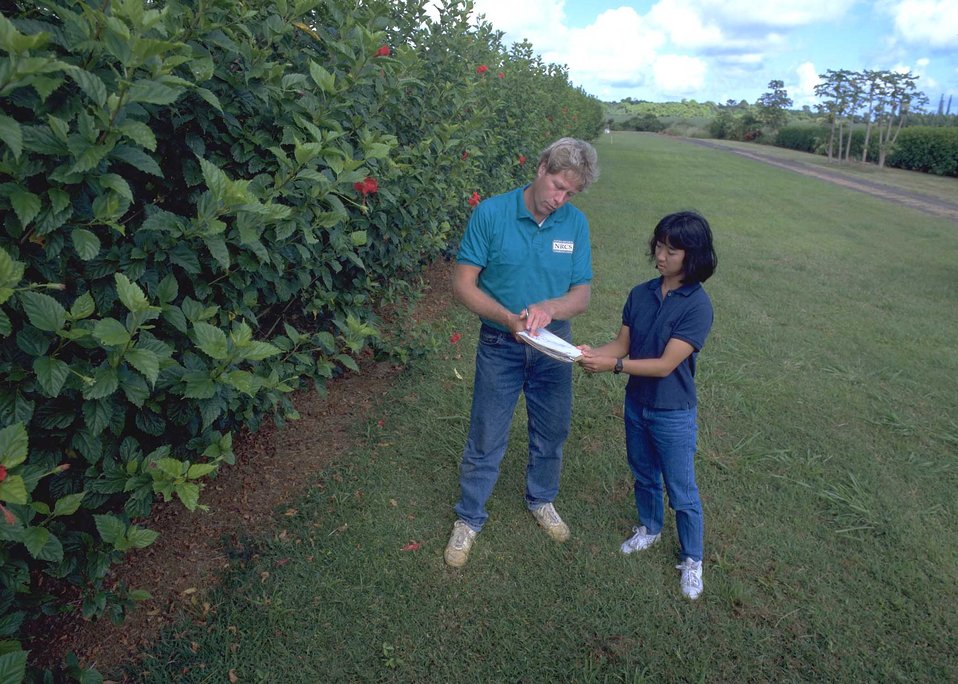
John Schlegel and Allison Sakata discuss windbreaks near Honolai, HI.